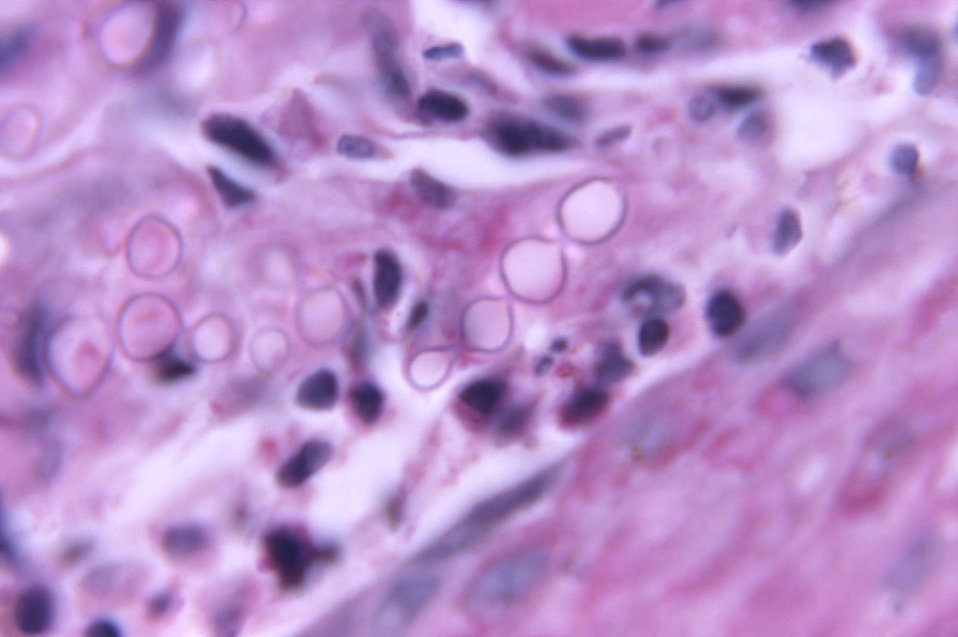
Under a magnification of 1125X, this PAS-stained (periodic-acid-Schiff) photomicrograph of a Florida dolphin tissue sample, revealed some of the histopathologic cytoarchitectural changes associated with what was determined to be a case of lobomycosis due to the fungus, Lacazia loboi, formerly known as Loboa loboi. Usually, lobomycosis is seen in humans and dolphins.